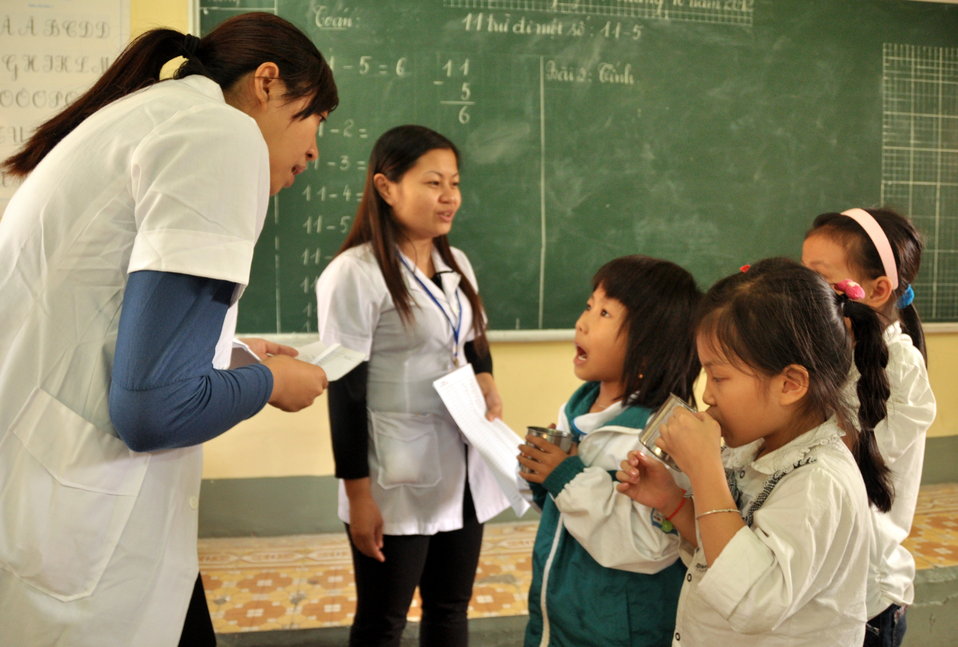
School children receive a dose of deworming medicine in Dien Bien Phu

Dien Bien, October 31, 2012